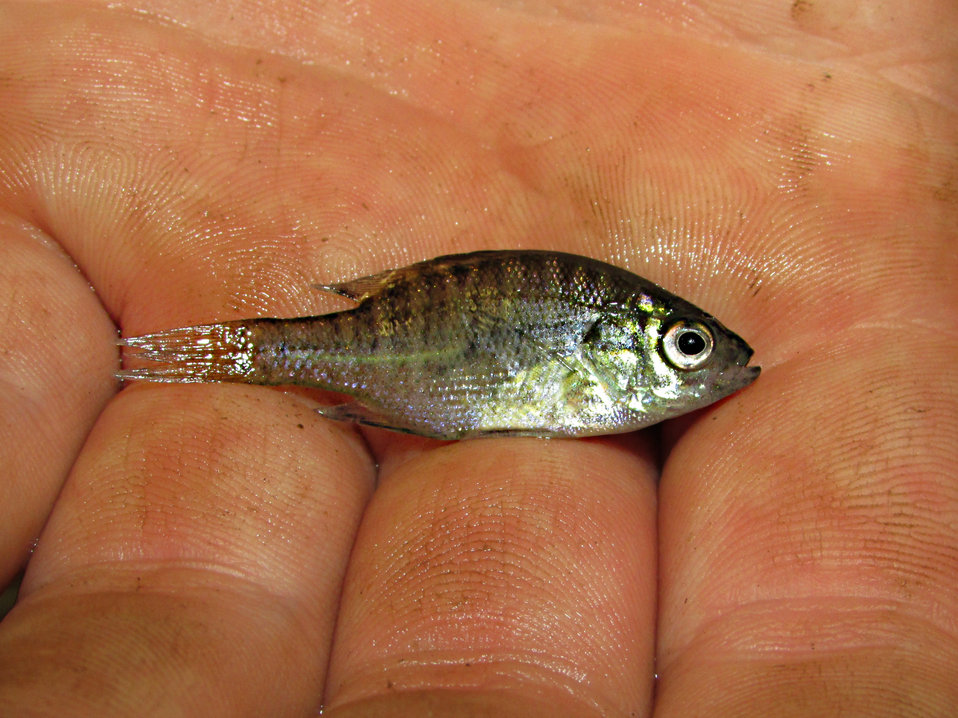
Bluegill Fingerling

Today we sent about 60 lbs of crappie and 45 lbs of bluegill to Lake Lakota near the Newton Hills State Park. That is roughly 40,000 fish! Here's a picture of one of the bluegill before making the trip.